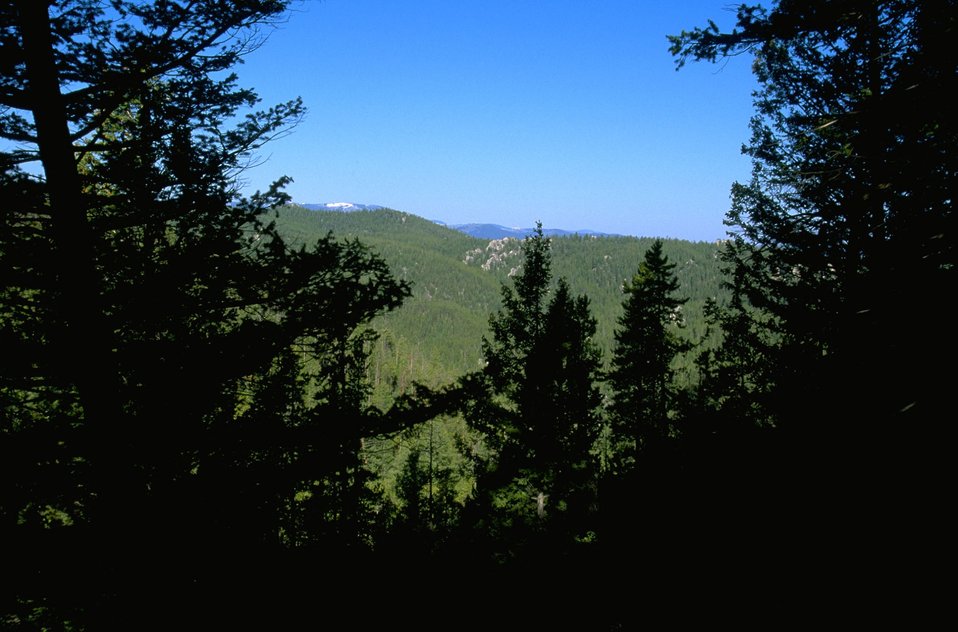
Silhouette of trees